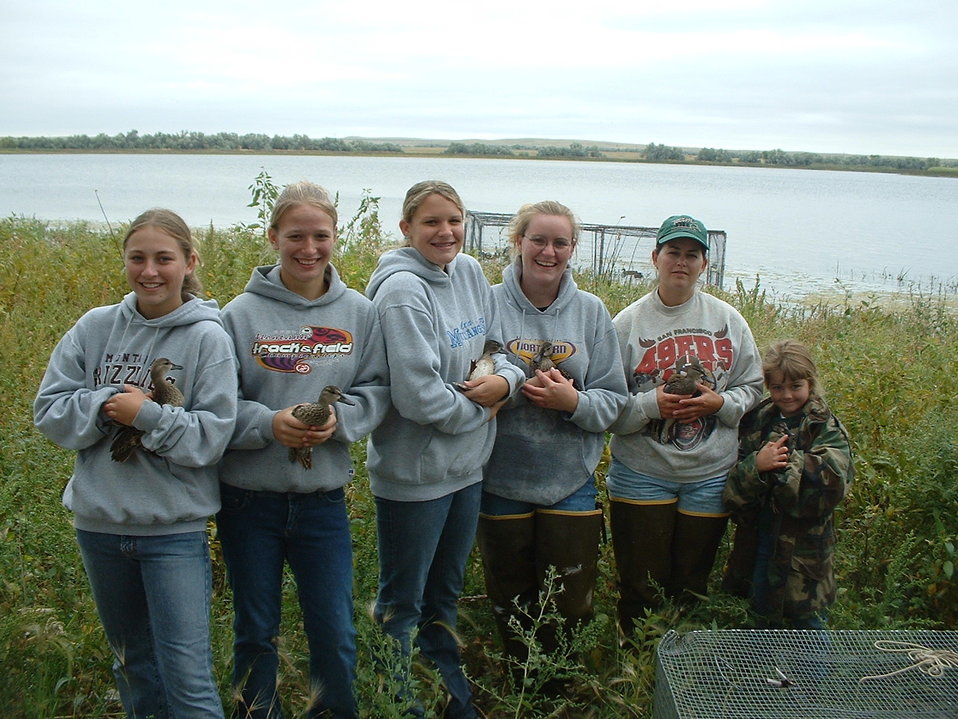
Banding Volunteers

Banding waterfowl on Bowdoing NWR